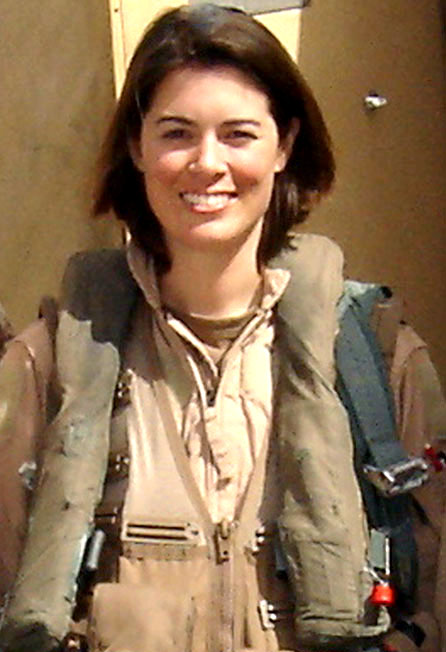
2006 Thunderbirds team includes first female demonstration pilot

SOUTHWEST ASIA -- Capt. Nicole Malachowski was selected for the 2006 U.S. Air Force Air Demonstration Squadron,